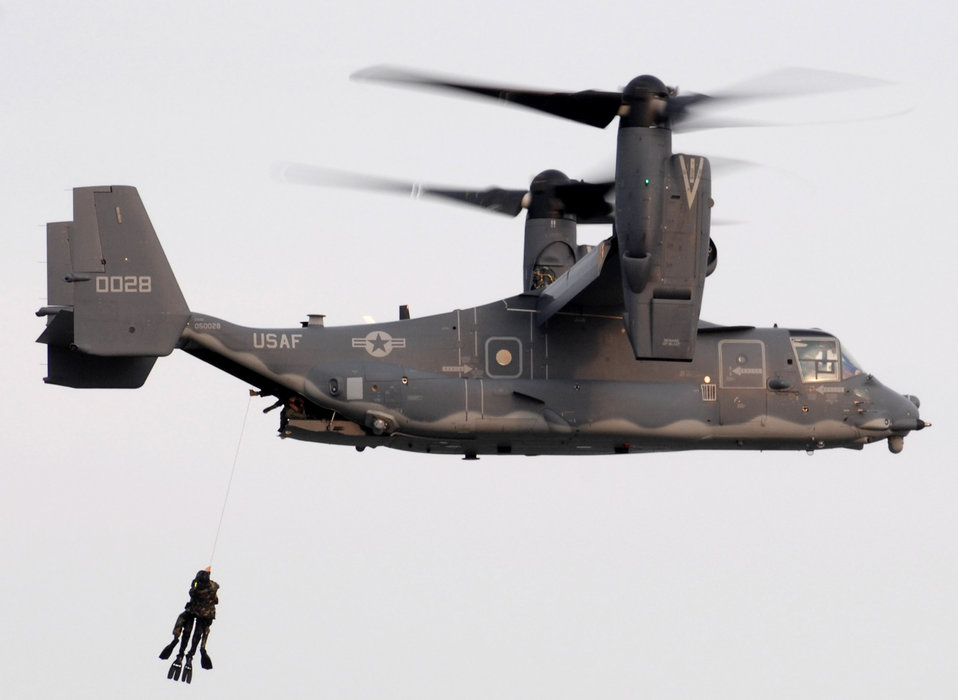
Up, up and away

Two Navy Seals get hoisted up into a CV-22 Osprey during a training mission June 28. The Osprey and aircrew are from the 8th Special Operations Squadron at Hurlburt Field, Fla.